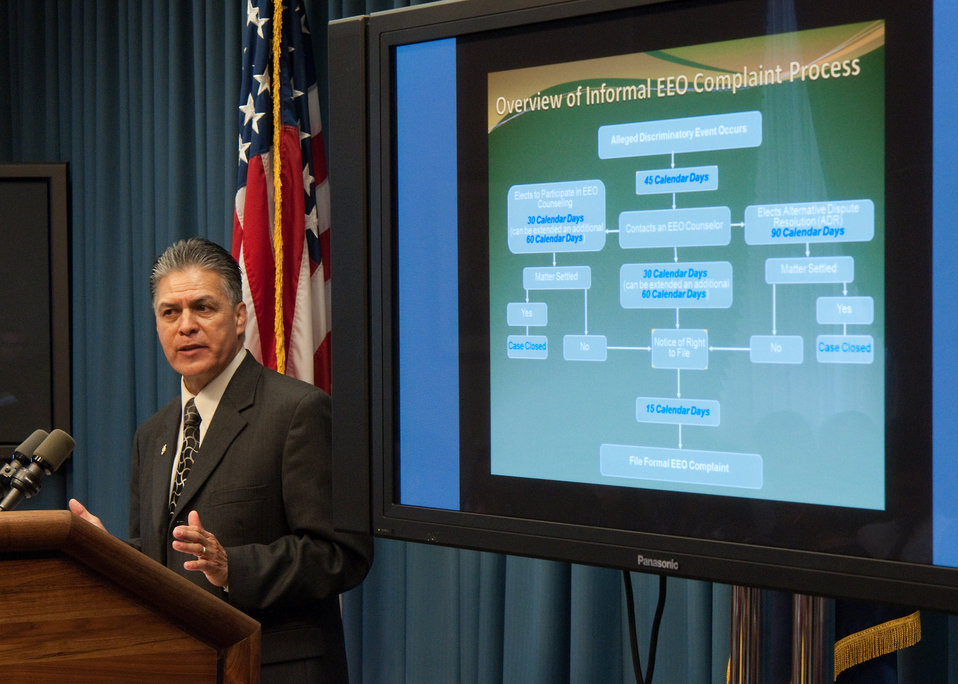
Larry Sandoval, Office of Civil rights, U.S. Forest Service describes Department of Agriculture EEO Policy and Workplace Behavior to college students during the USDA HACU and 1994 Tribal College Summer Internship Orientation Program at the Department of Agriculture in Washington, DC, Monday, June 7, 2010. USDA Photo 10di1391-52.